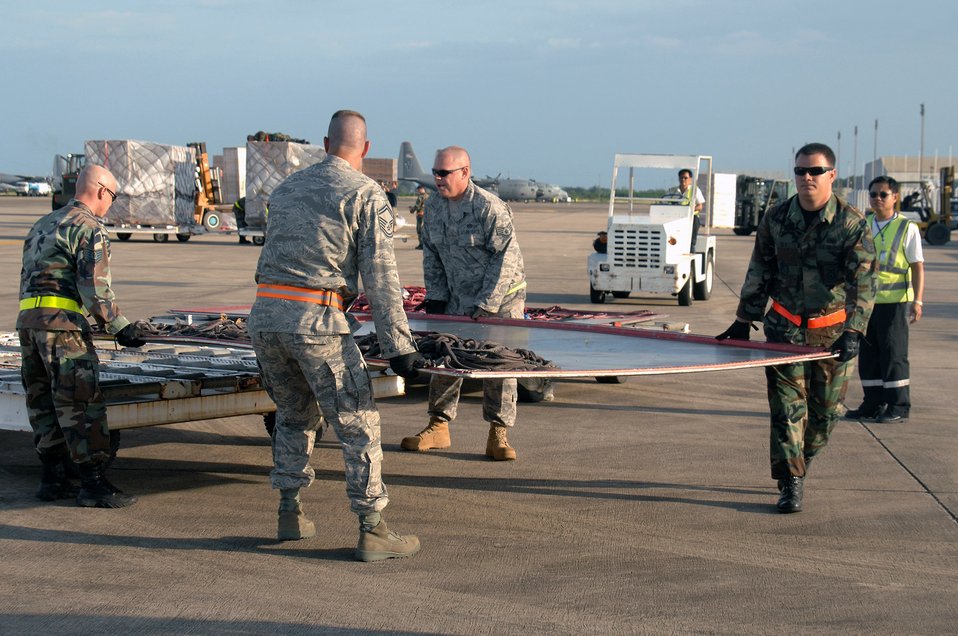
Help is on the way

Airmen from Andersen Air Force Base, Guam, remove a cookie sheet being used for the transfer of 169,000 pounds of humanitarian aid supplies for delivery to Burma from a Boeing 747 commercial airplane May 16 at Utapao Thai Royal Navy Air Base, Thailand.